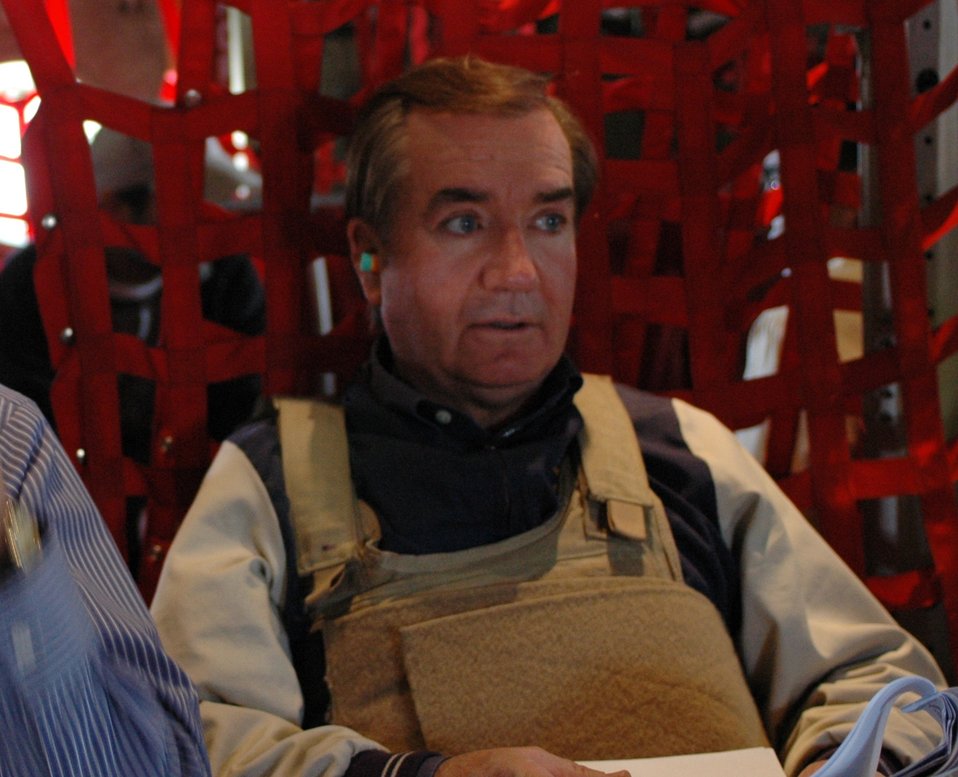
CODEL Berman